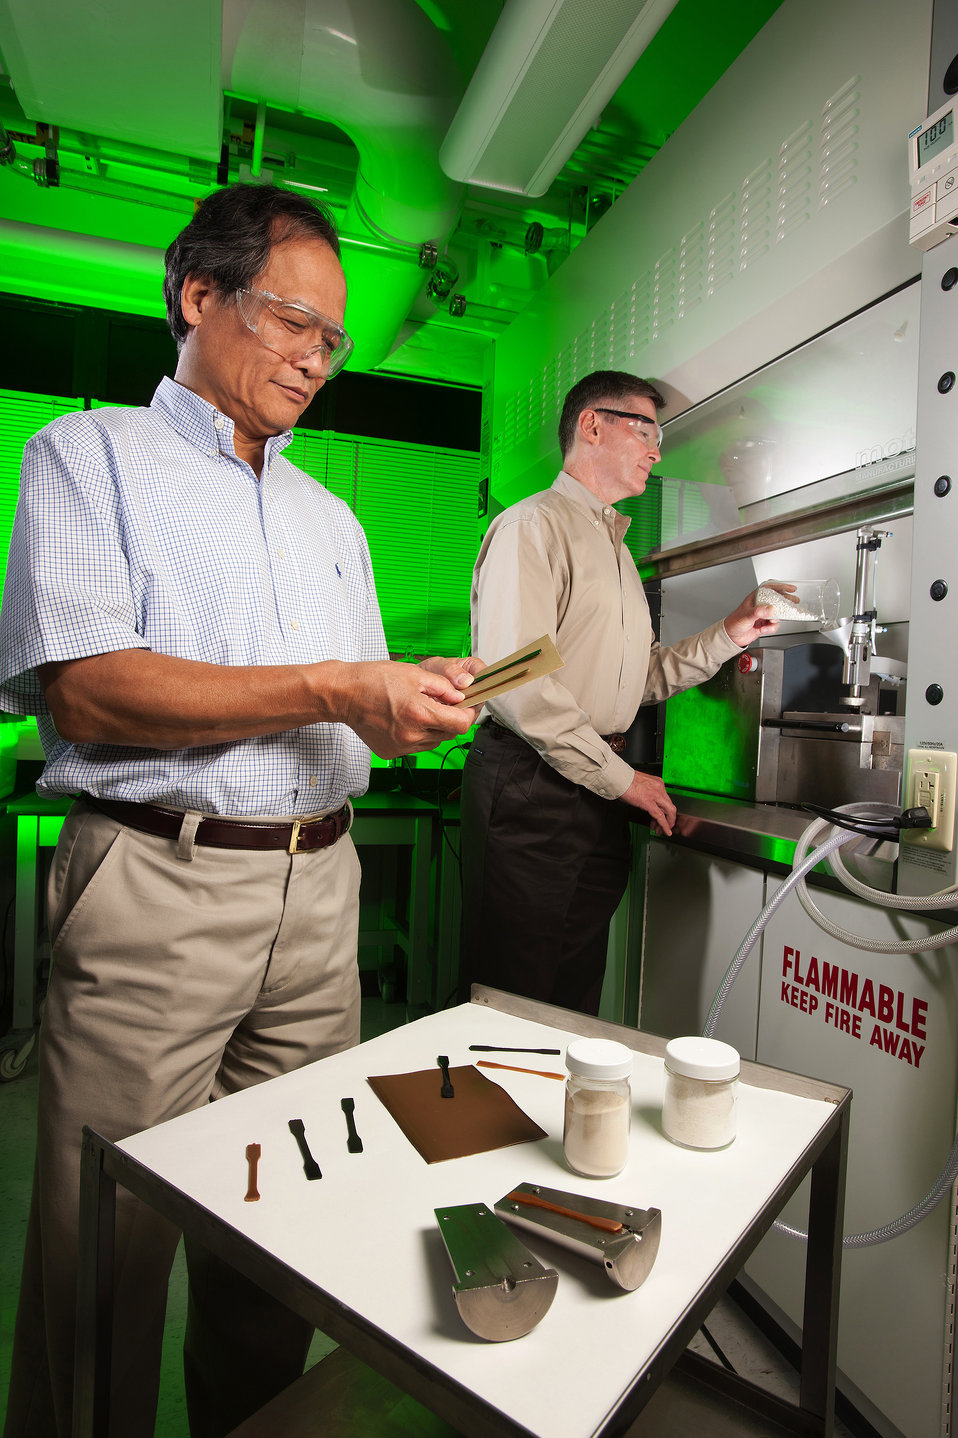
U.S. Department of Agriculture (USDA) Agricultural Research Service (ARS) plant physiologist Arland Hotchkiss (right) adds sugar beet pulp and polylactic acid to an extruder to make the bioplastic strips that chemist LinShu Liu (left) is inspecting at the USDA ARS North Central Laboratory in Brookings, SD on Feb. 6, 2004.